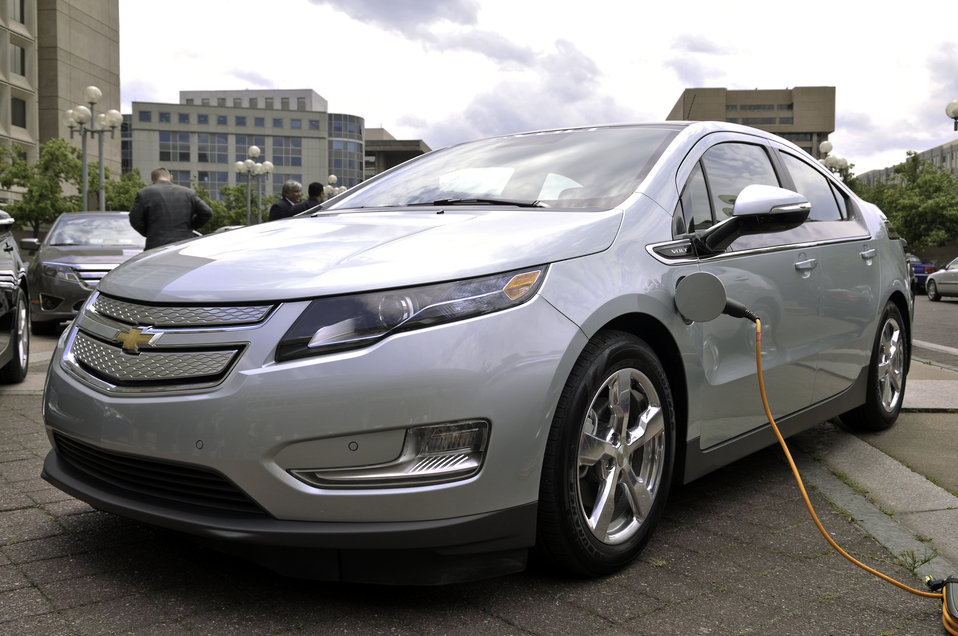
Clean Fleets Announcement 14 of 14

A Chevy Volt charging up on L'Enfant plaza.